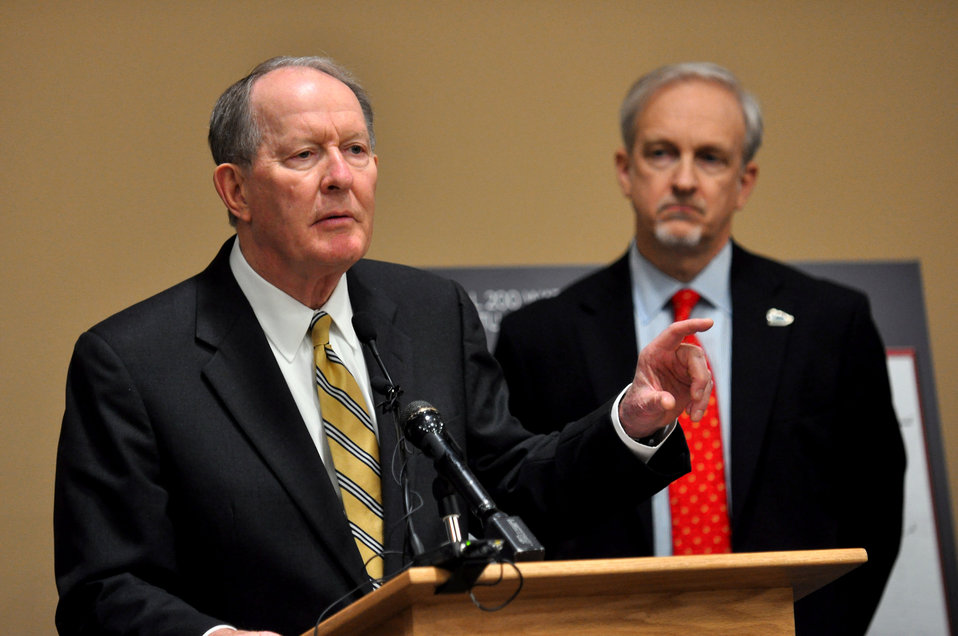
Mercury Cleanup Press Conference Y-12 Oak Ridge Speaking U.S. Sen. Lamar Alexander (R-Tenn.) with EM Senior Advisor Dave Huizenga

13-051 DOE photo Lynn Freeny 5-3-2013 Oak Ridge Tennessee